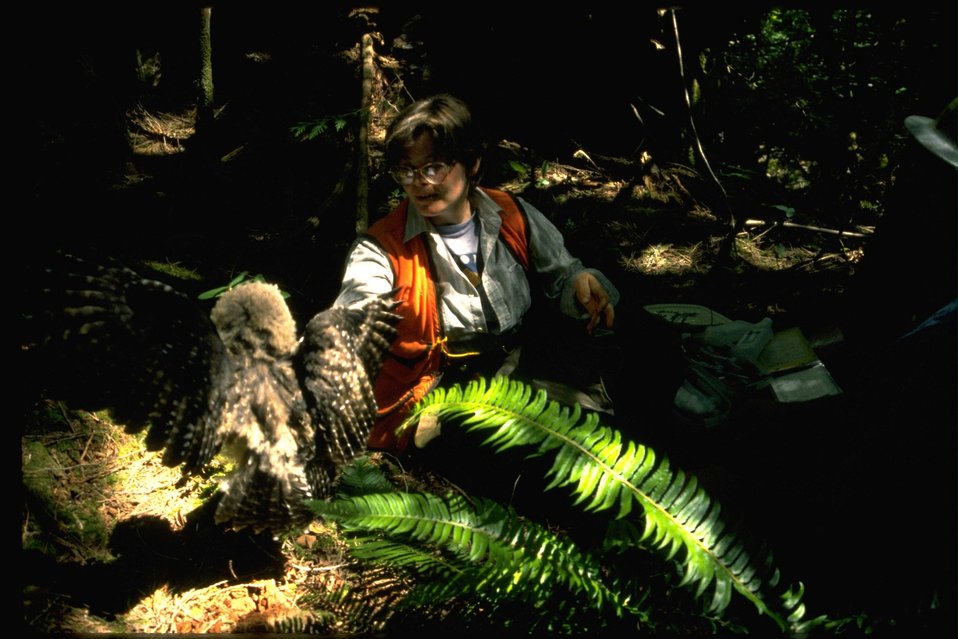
Joanne is releasing the Northern Spotted Owl.